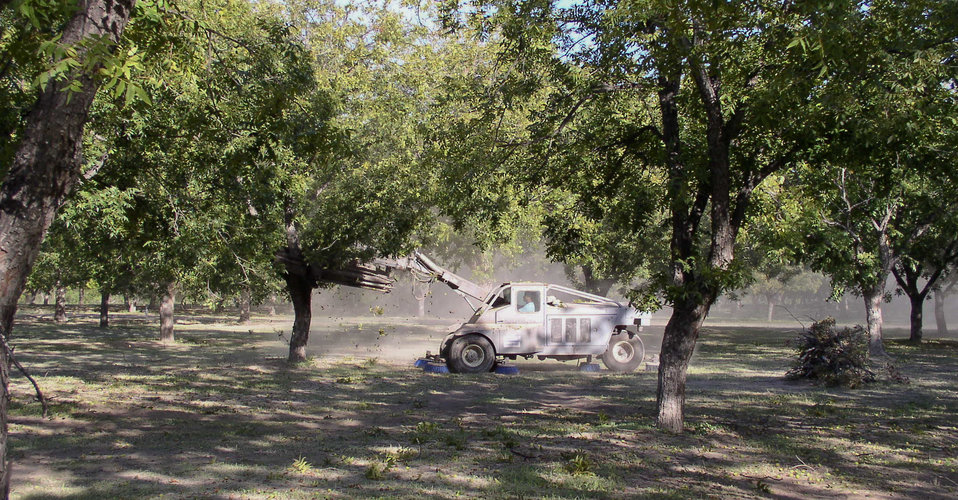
Harvest time at Arrowhead Farms of Crystal City, TX, on Wednesday, October 12, 2011, means powered shakers go from tree to tree shaking pecans on the 719-acre farm which features some orchards (seen here) that are equipped with underground micro irrigation that feeds water to the roots of 4,380 pecan trees on 146 acres. Mr. Mohammad said, “USDA (U.S. Department of Agriculture) was essential to my business and trees surviving the recent exceptional drought. The trees were stress free thanks to underground micro-irrigation. This is essential to the future growth of Texas agriculture and good for America.” U.S. Department of Agriculture’s (USDA) Environmental Quality Initiative Program (EQIP) awarded Mr. Mohammad a $130,000 grant in 2008. He provided $26,000 for the balance of the $156,000 total cost to install a 146-acre underground micro-irrigation for 4,380 trees.